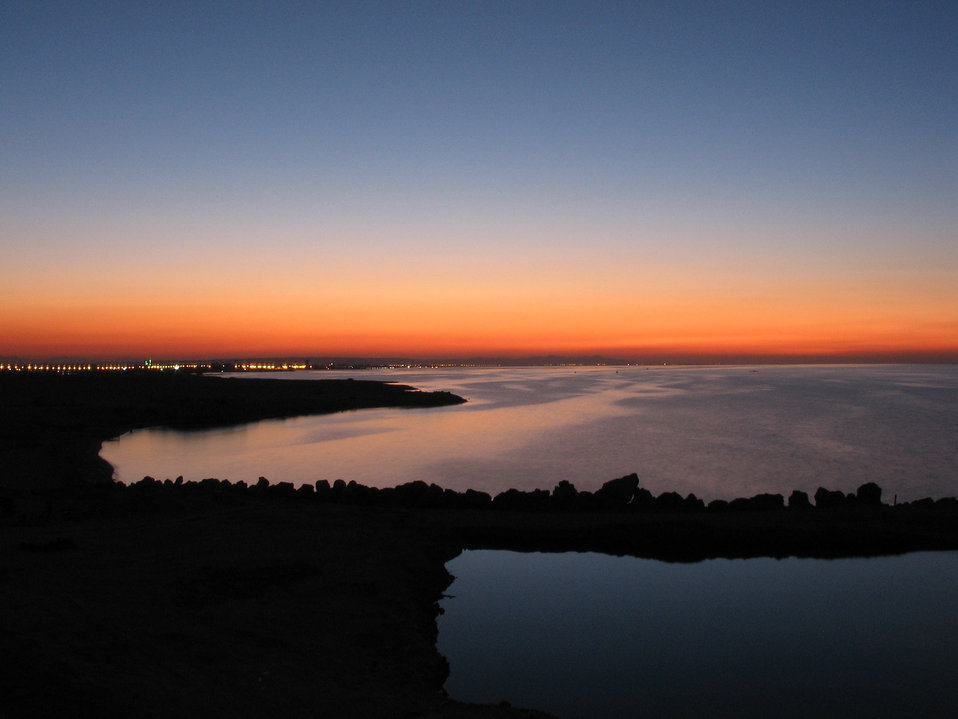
Sunset on the coast

Twilight on the coast.